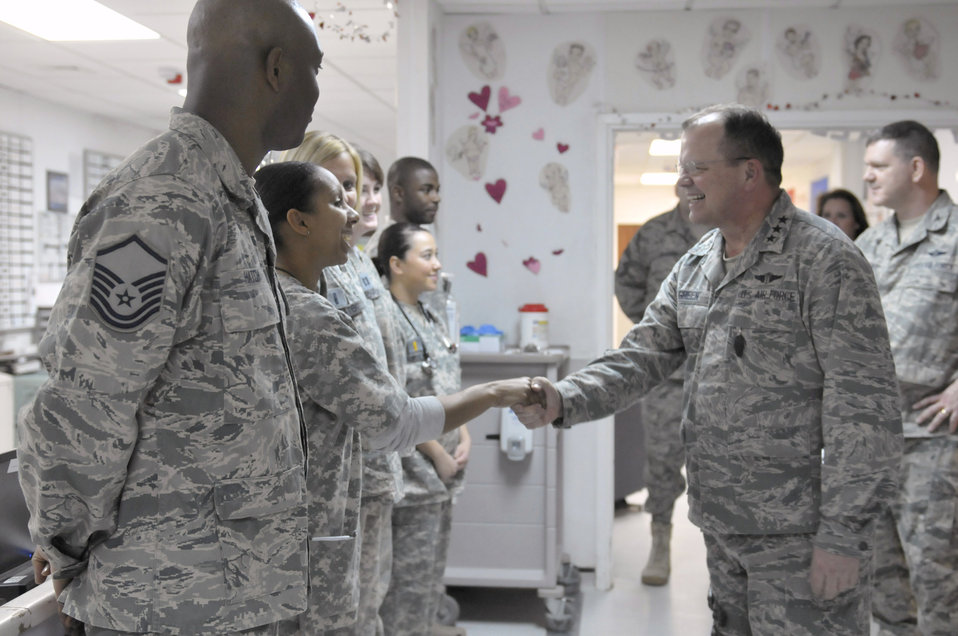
Surgeons general visit Bagram

Air Force Surgeon General Lt. Gen. (Dr.) Charles B. Green meets members of the 455th Expeditionary Medical Group Feb. 13, 2011, at the Craig Joint Theater Hospital at Bagram Airfield, Afghanistan.